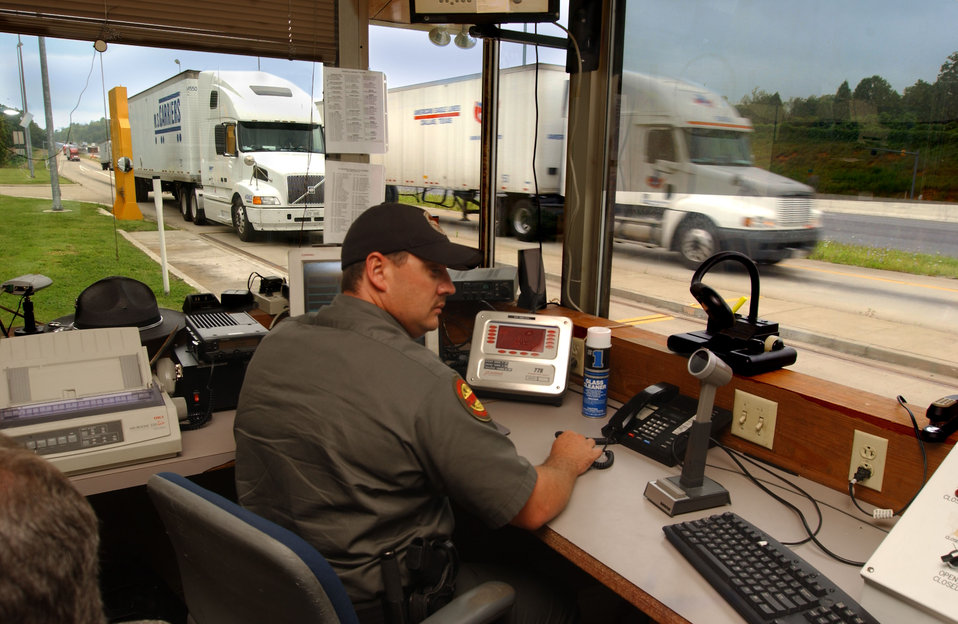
Watt Road Weigh Station with Radiation Detectors

03-150-53 DOE photo by Lynn Freeny

Watt Road Weigh Station with Radiation Detectors installed Knoxville Tennessee 2003